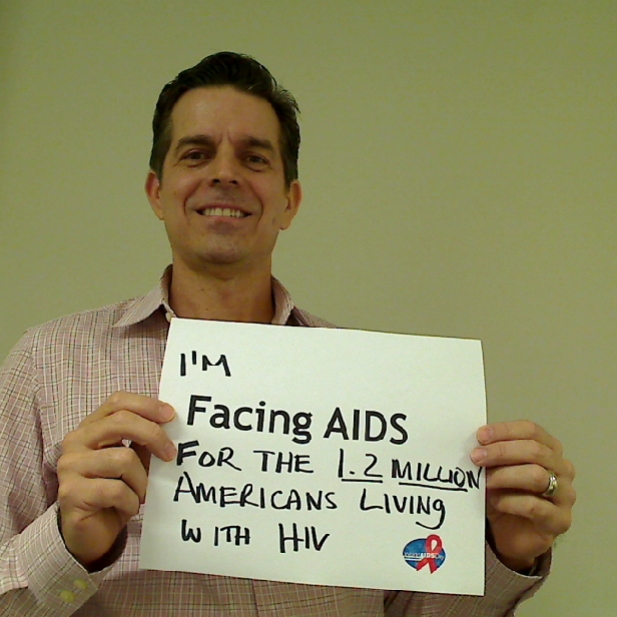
I'M Facing AIDS FOR THE 1.2 MILLION AMERICANS LIVING WITH HIV.